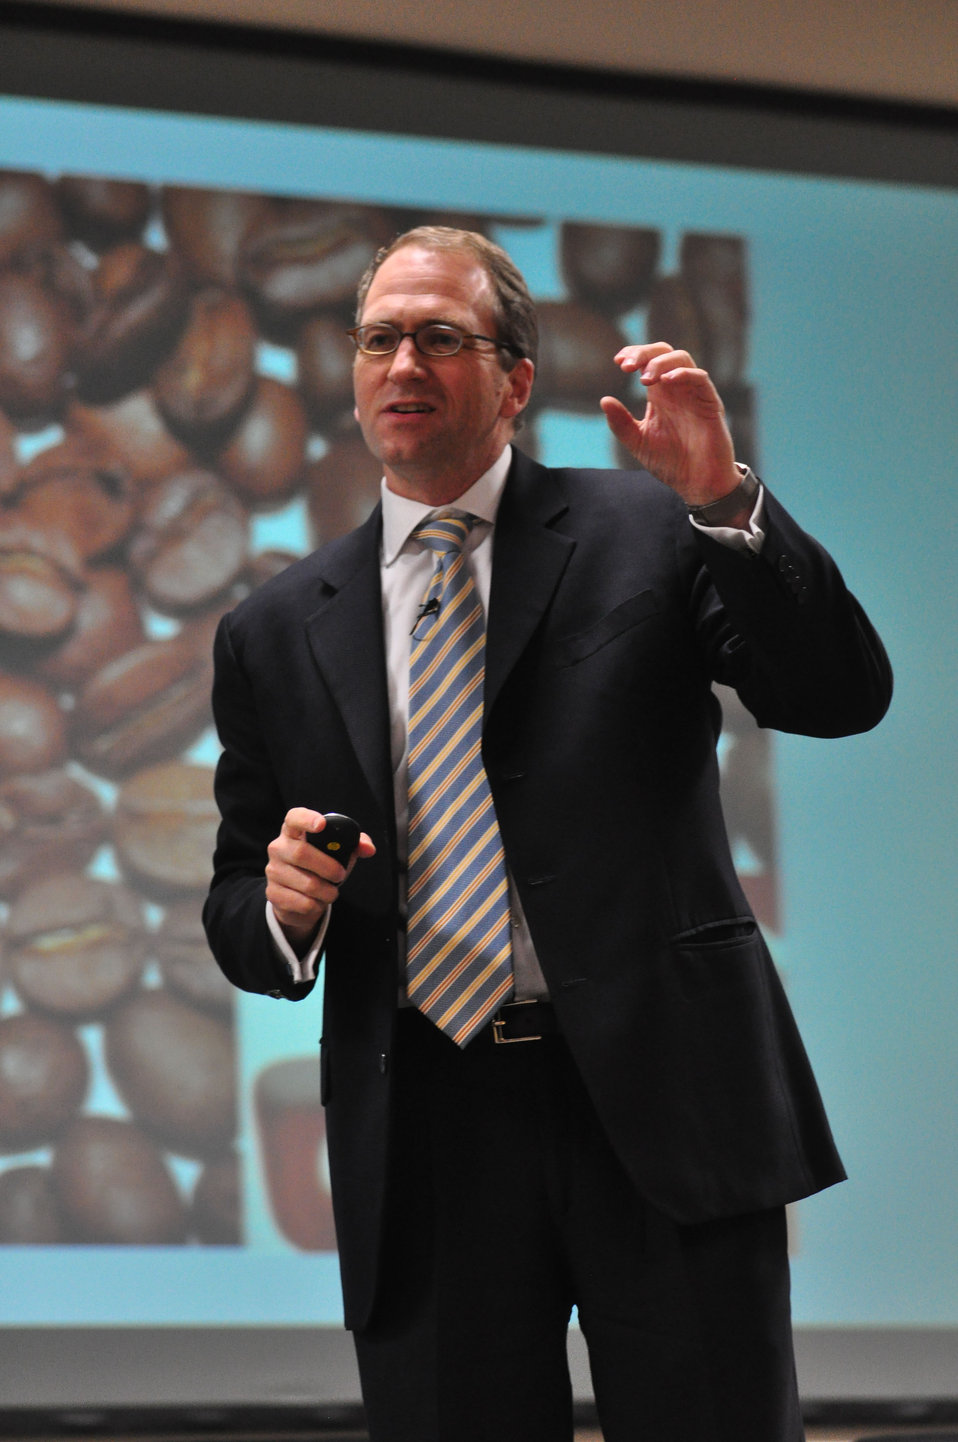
Tennessee Valley Corridor Summit Oak Ridge

13-062 DOE photo Lynn Freeny 5-29-2013 Oak Ridge Tennessee